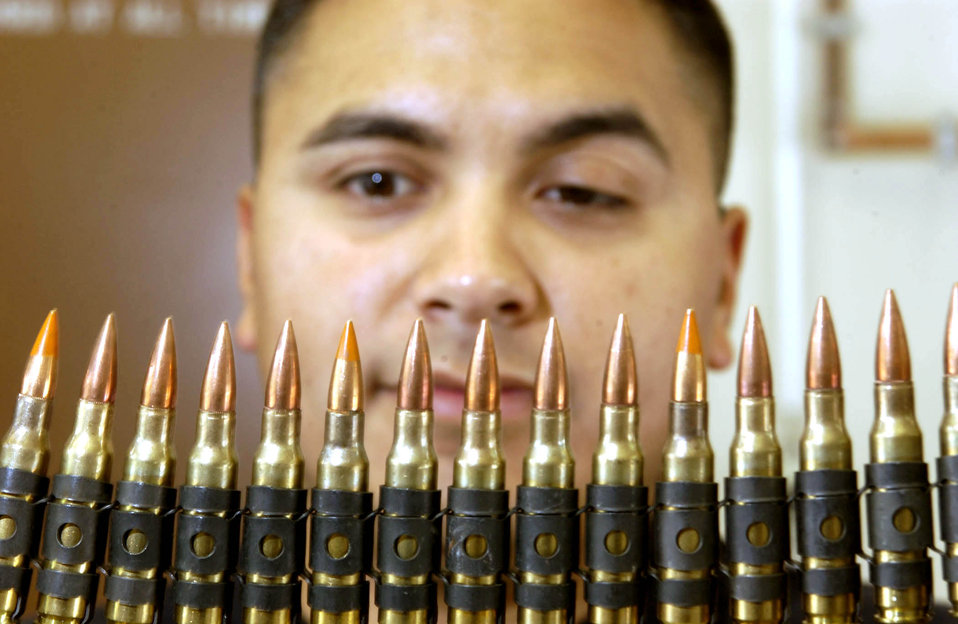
Line 'em up

RAMSTEIN AIR BASE, Germany -- Staff Sgt. Tony Gallegos inspects tracer rounds to ensure casings are not damaged, primers are proper, and all of the rounds are accounted for. All munitions returned to the depot here are inspected before being stored. Sergeant Gallegos is a munitions inspector with the 435th Munitions Squadron.